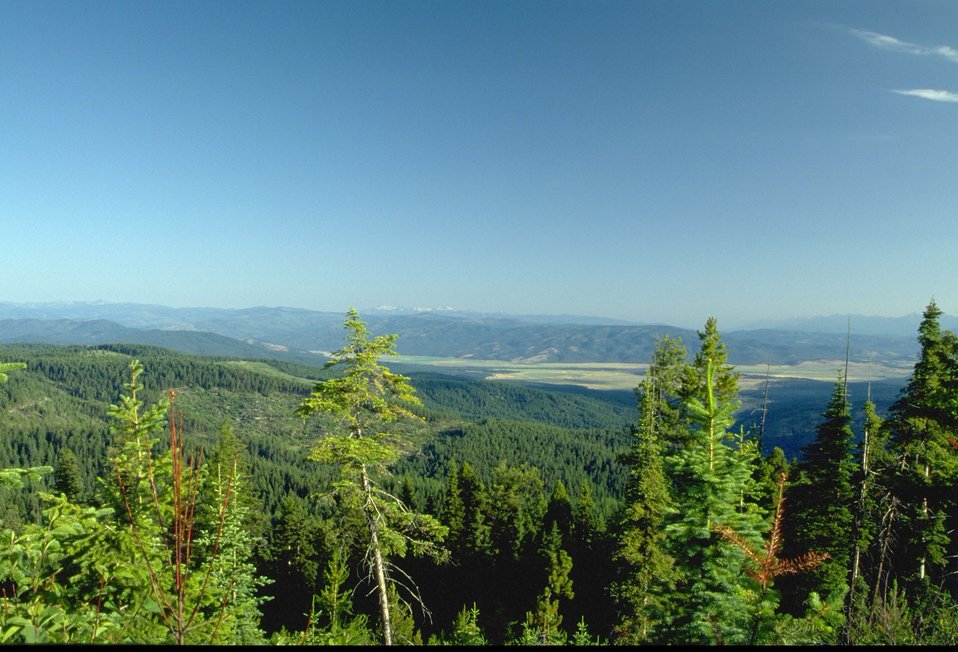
Blackfoot River valley